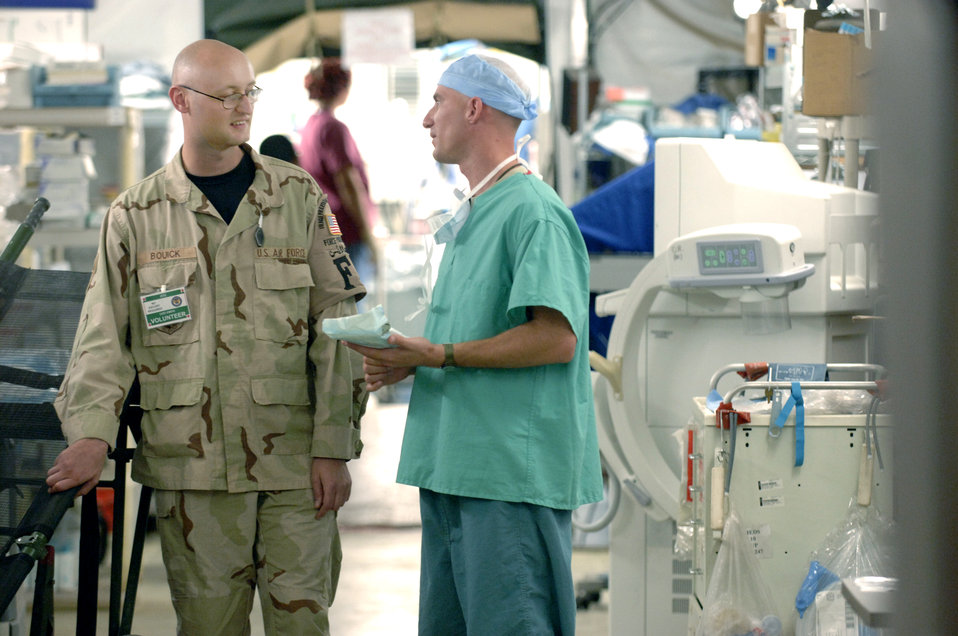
Tough duty brings out best in Balad hospital volunteers

Staff Sgt. Robert Bouick (left) speaks with a fellow hospital volunteer, Army Reserve Specialist Joushua Lilliblad, at the Air Force Theatre Hospital at Balad Air Base, Iraq. Sergeant Bouick is a force protection escort. Specialist Lilliblad, who amassed more than 400 hours volunteering during his 365 day tour in Iraq, is cross-training from munitions to becoming a surgical technician and is spending his last duty day in theatre volunteering in the operating room during the midnight shift.